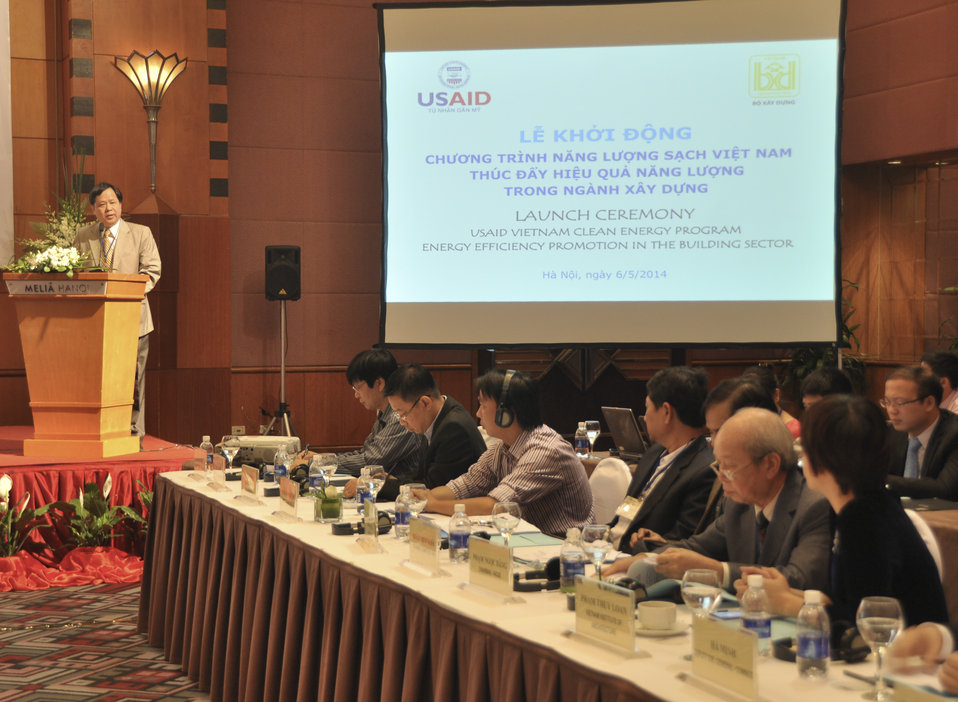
Launching of USAID Vietnam Clean Energy Program.

Hanoi, May 6, 2014.